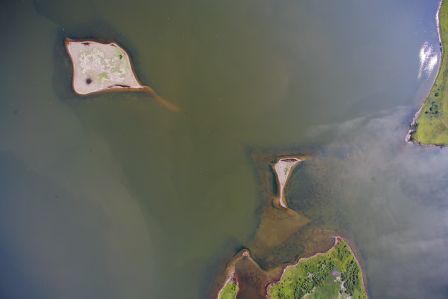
Aerial view of smaller nesting islands

Aerial view of the two smaller nesting islands at Chase Lake National Wildlife Refuge in North Dakota.